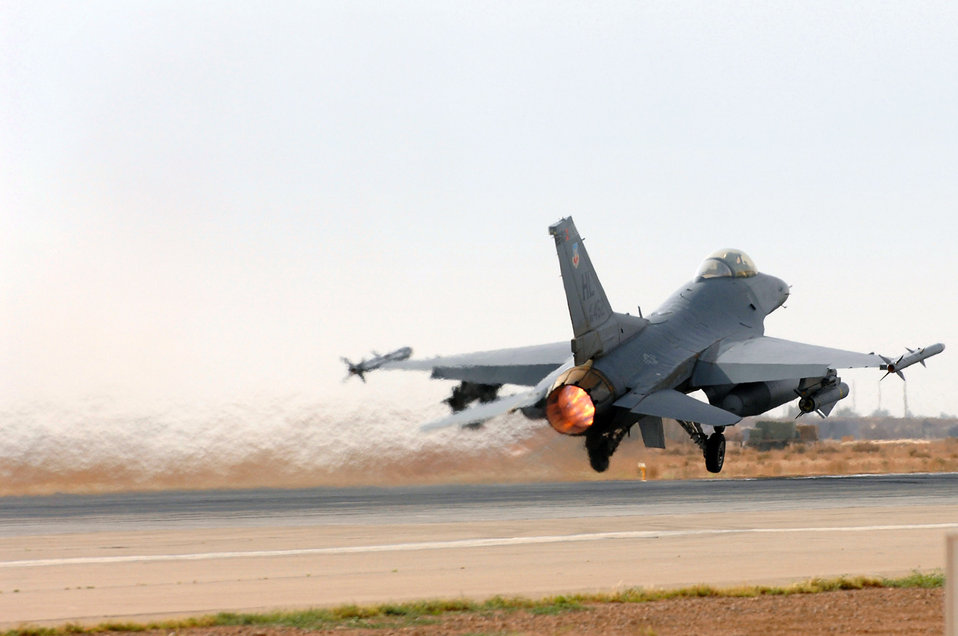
Pilots contribute to 1M GWOT sorties statistic, much more

An F-16 Fighting Falcon from Hill Air Force Base, Utah, takes off from Balad Air Base, Iraq, April 19. The F-16 pilots provide close-air support to Army ground units by identifying improvised explosive devices and emplacers in the area.